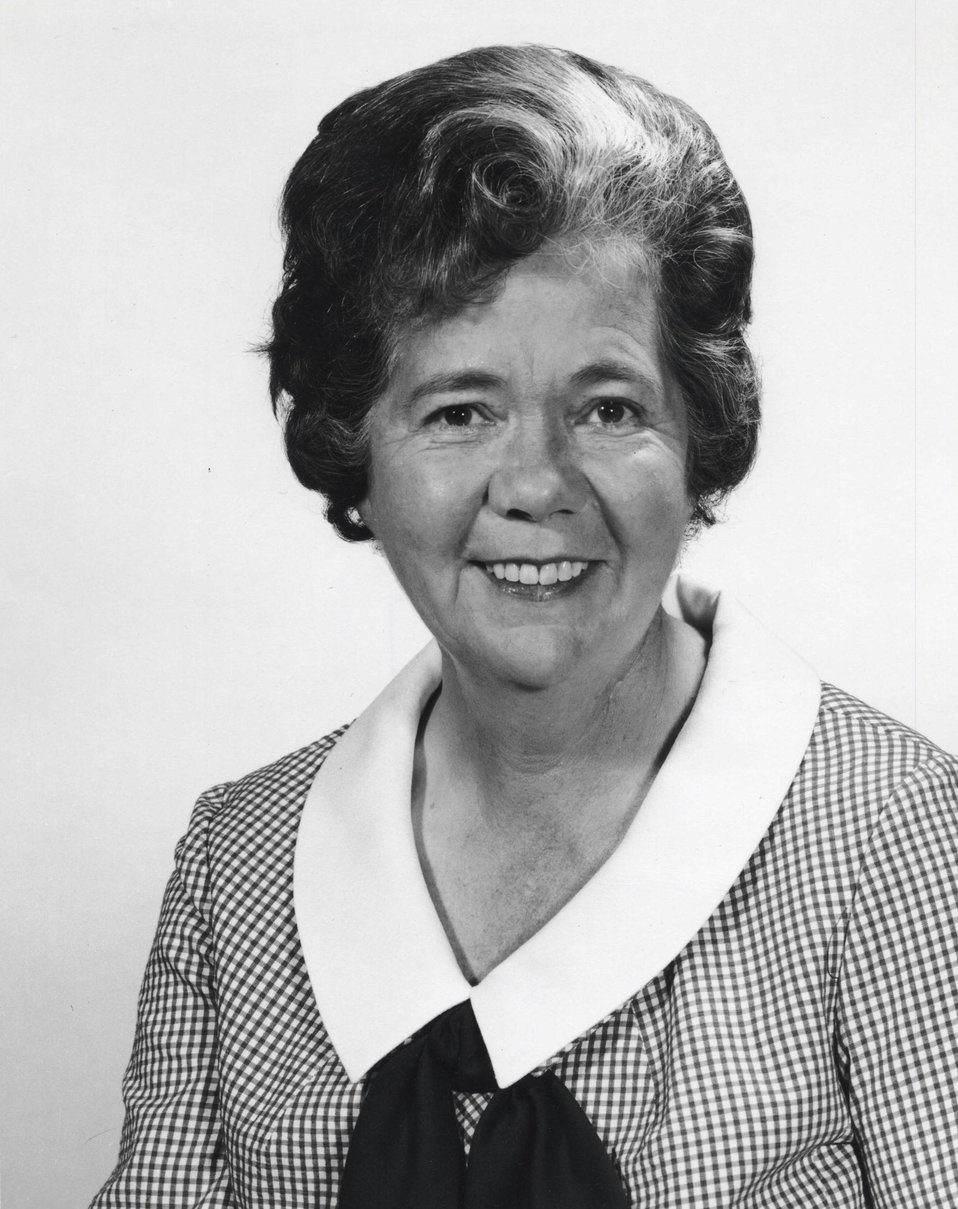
JANE HALL ( BRADBURY'S DEPUTY DIRECTOR)